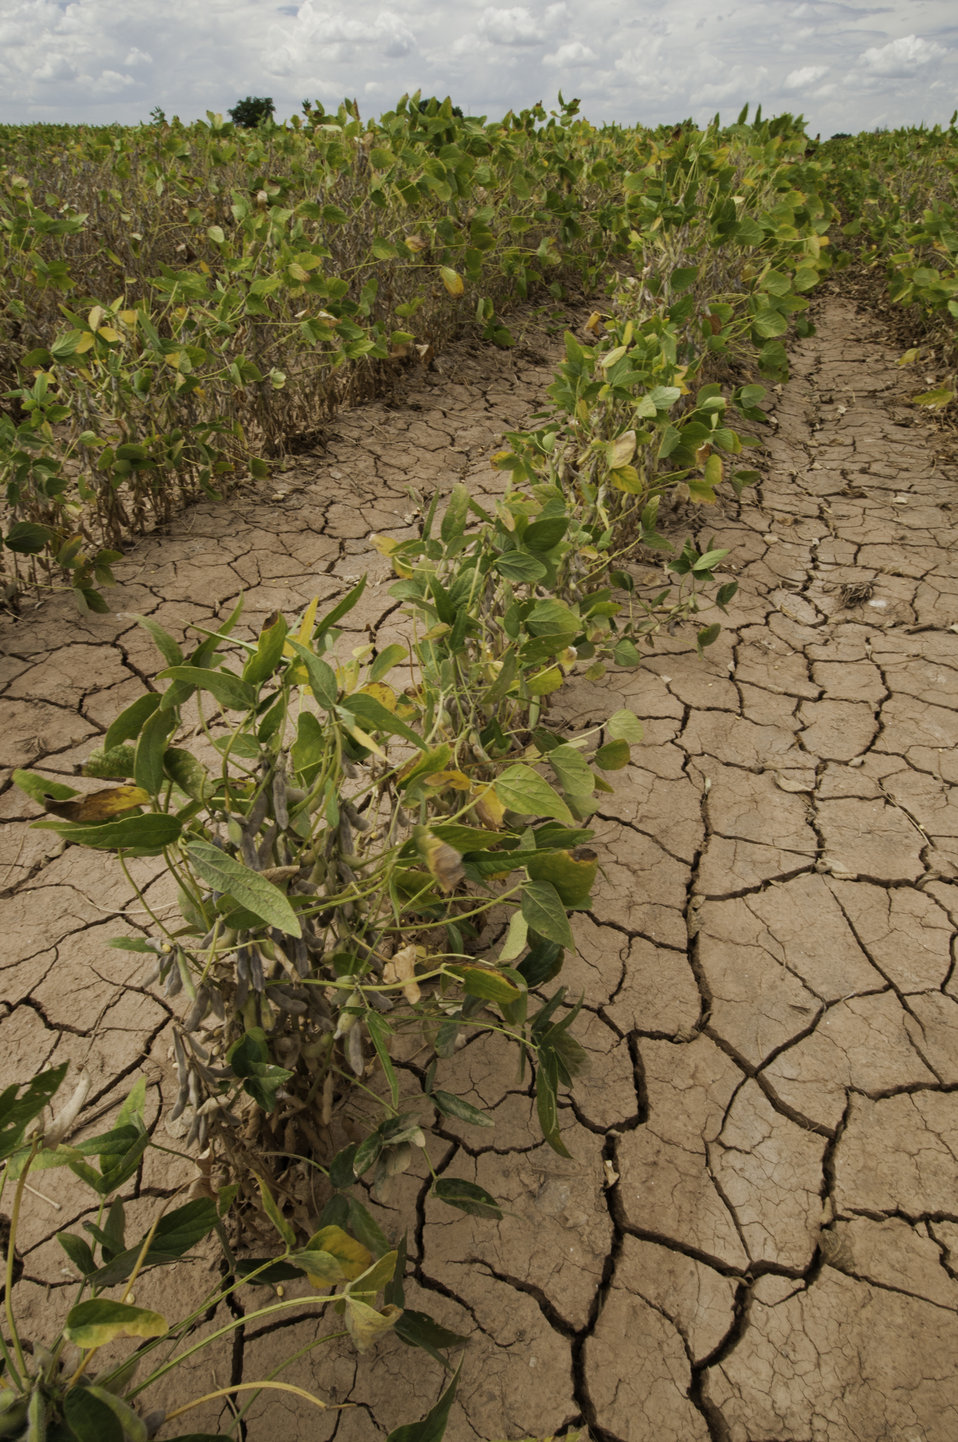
Soybeans show the effect of the drought near Navasota, TX on Aug. 23, 2013.